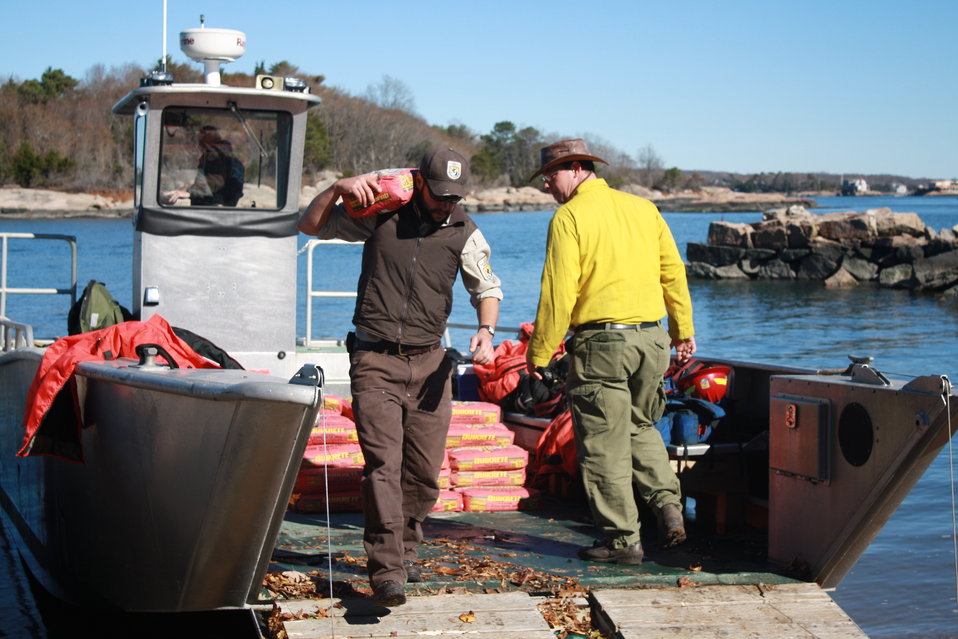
Beginning repairs at Stewart B. McKinney National Wildlife Refuge (CT)

Refuge staff and crews unload the boat at Outer Island to begin repairs after Hurricane Sandy.